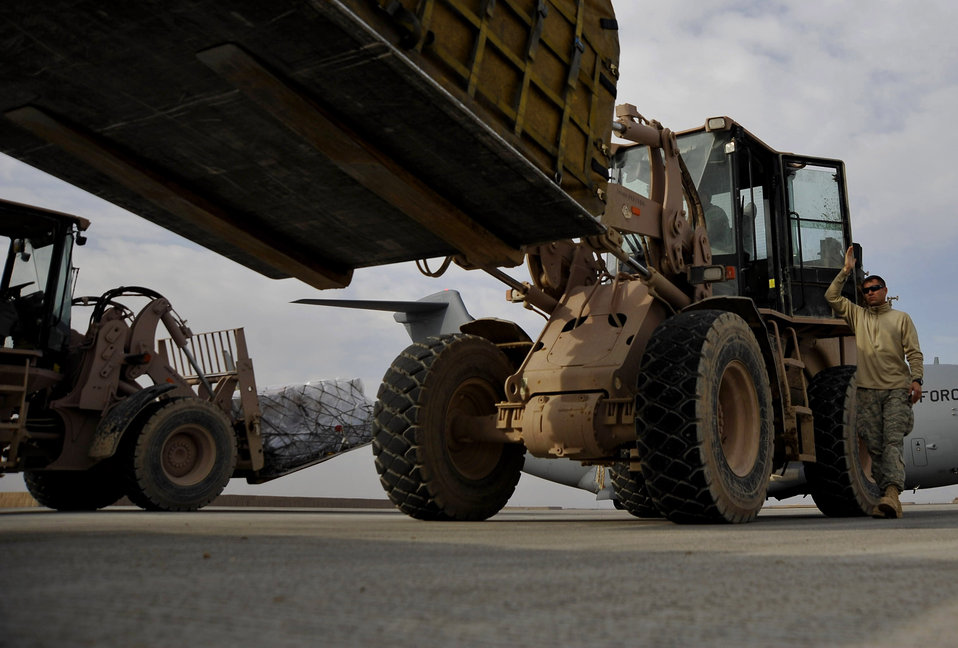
Unloading what Camp Bastion needs

Tech. Sgt. Chris Alexander spots as pallets are unloaded from an aircraft Dec. 11, 2009, at Camp Bastion, Afghanistan. Sergeant Alexander is from the 451st Expeditionary Logistics Readiness Squadron Detachment 1.